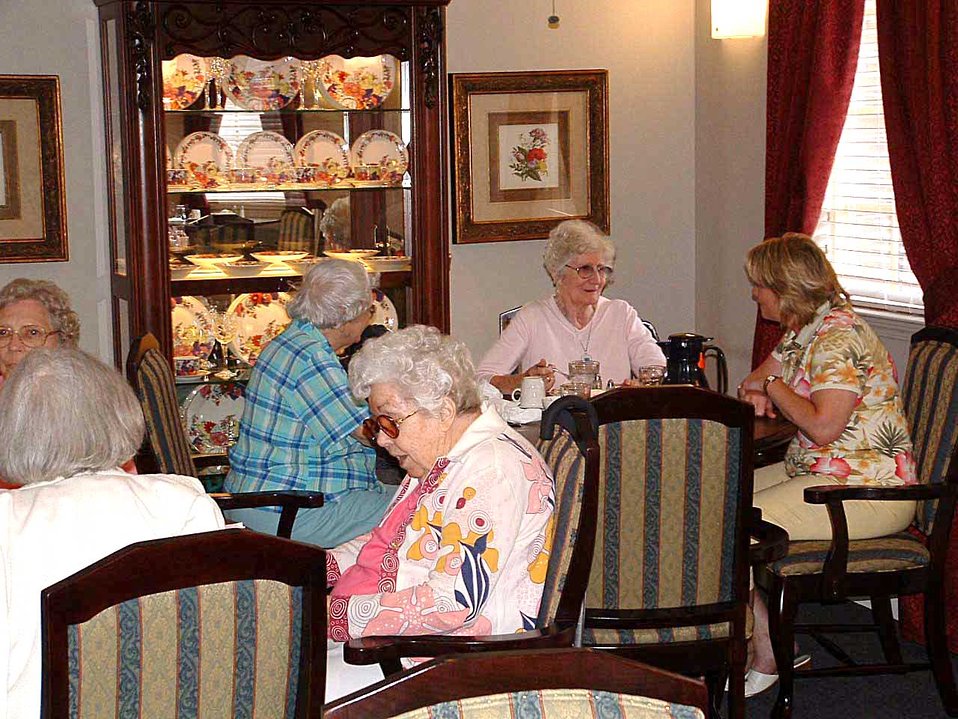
Enlisted Village opens assisted living doors

SHALIMAR, Fla. -- Hawthorn House residents eat dinner in their dining room. The Air Force Enlisted Village recently opened the 64-apartment assisted living residence.